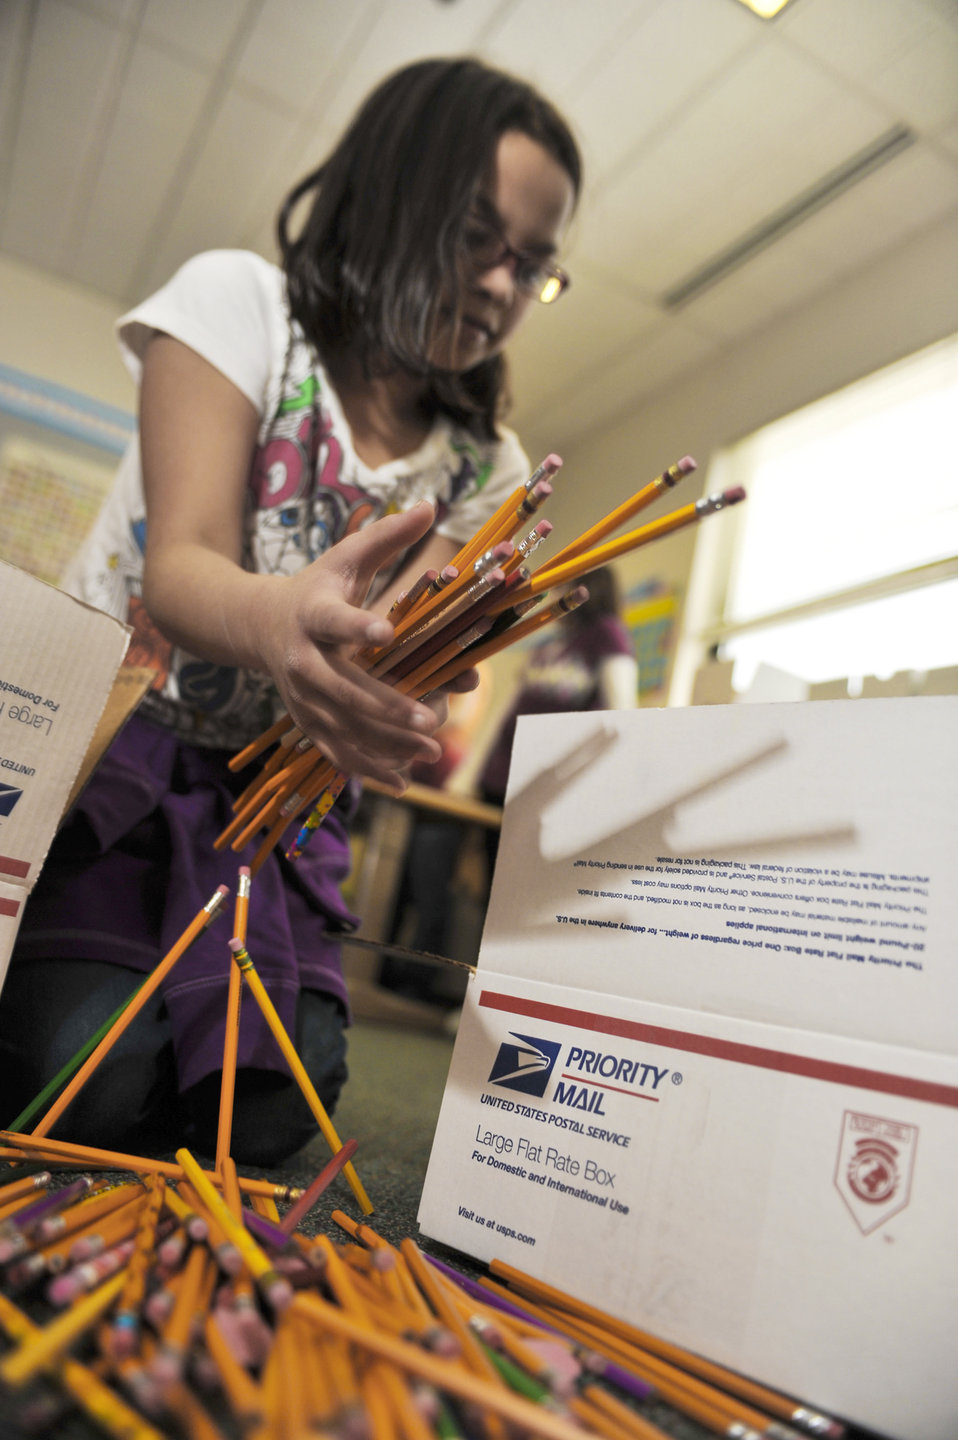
Elemendorf children lend a helping hand

Mikaelyn Gogue loads pencils into a box, Feb. 25, 2010, that will be sent to students in Konar River Valley, Afghanistan. Mikaelyn is a fourth-grade student at Aurora Elementary School student at Elmendorf Air Force Base, Alaska.